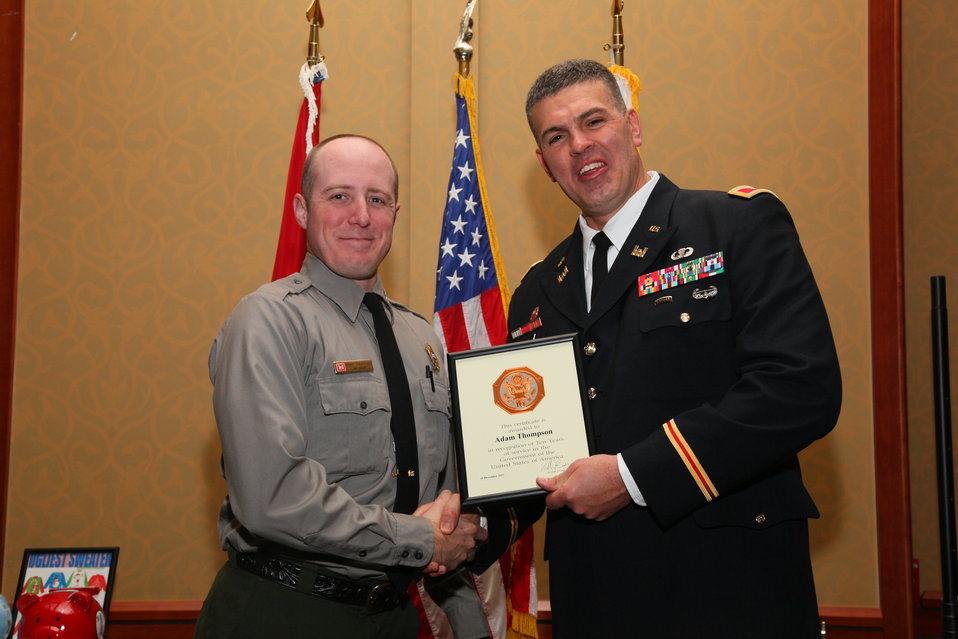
Sacramento District Holiday Party 2011